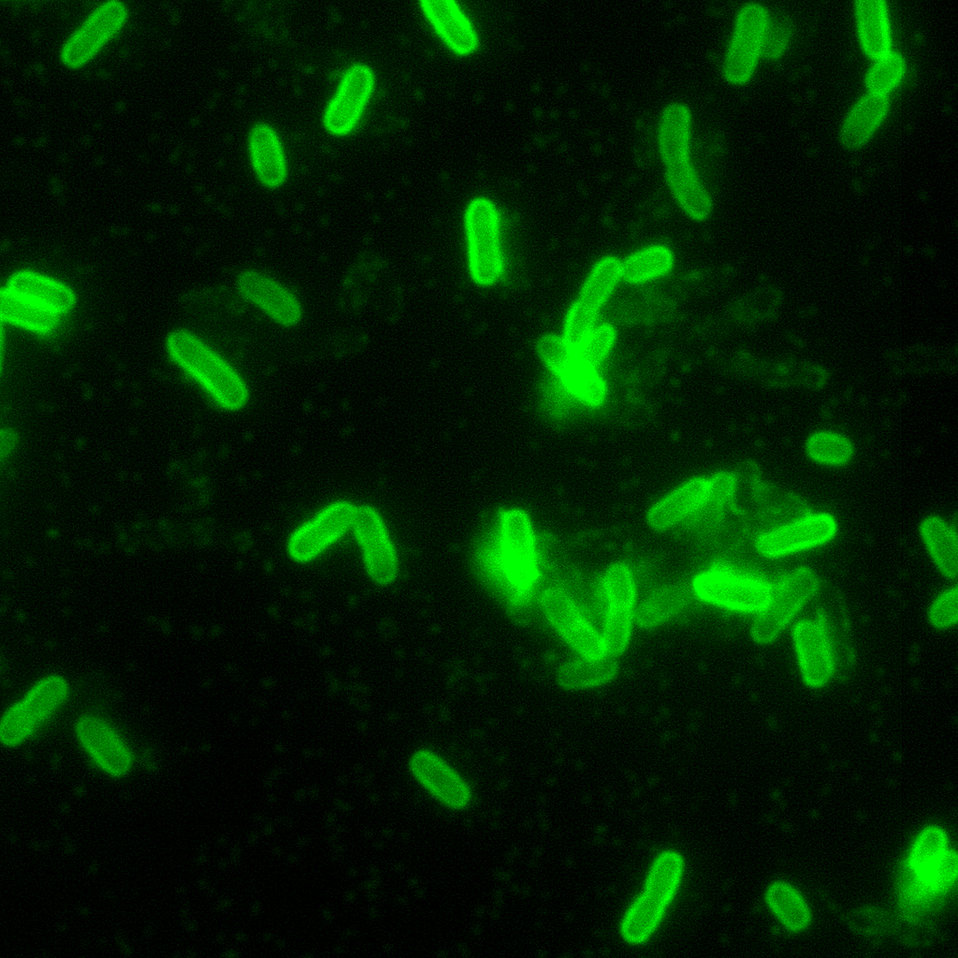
Yersinia pestis, Direct Fluorescent Antibody Stain (DFA), 200x Magnification.